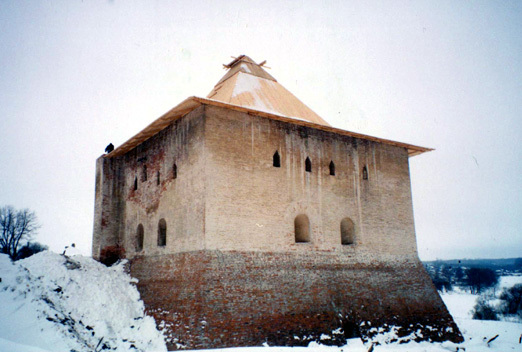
Русский: Вязьма. Cпасская башня кремля.Фото Viktorianec